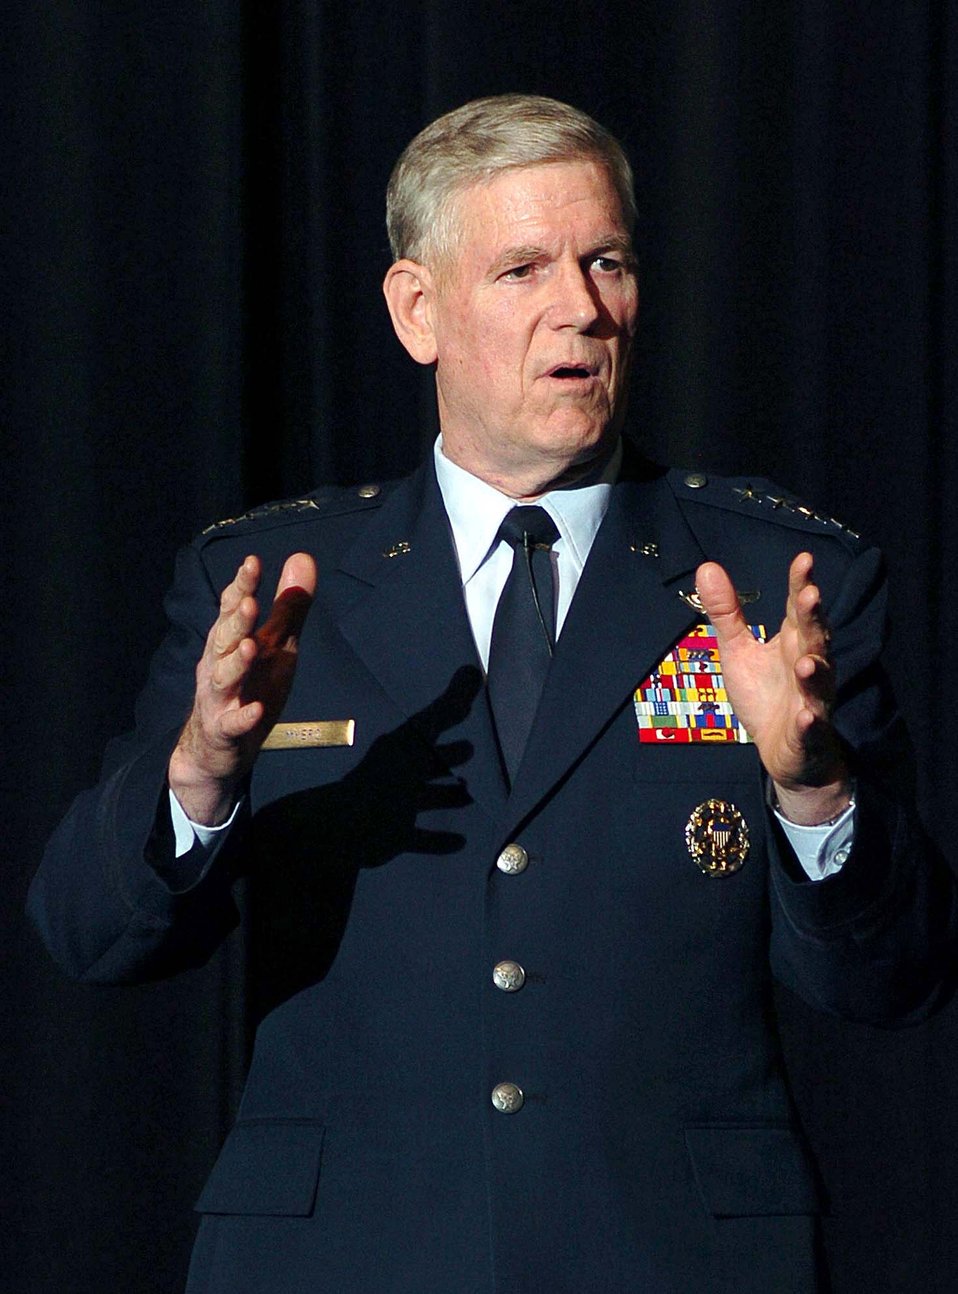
General Myers addresses academy cadets

U.S. AIR FORCE ACADEMY, Colo. -- Gen. Richard B. Myers, chairman of the Joint Chiefs of Staff, addresses the U.S. Air Force Academy's 12th Annual National Character and Leadership Symposium here Feb. 24.